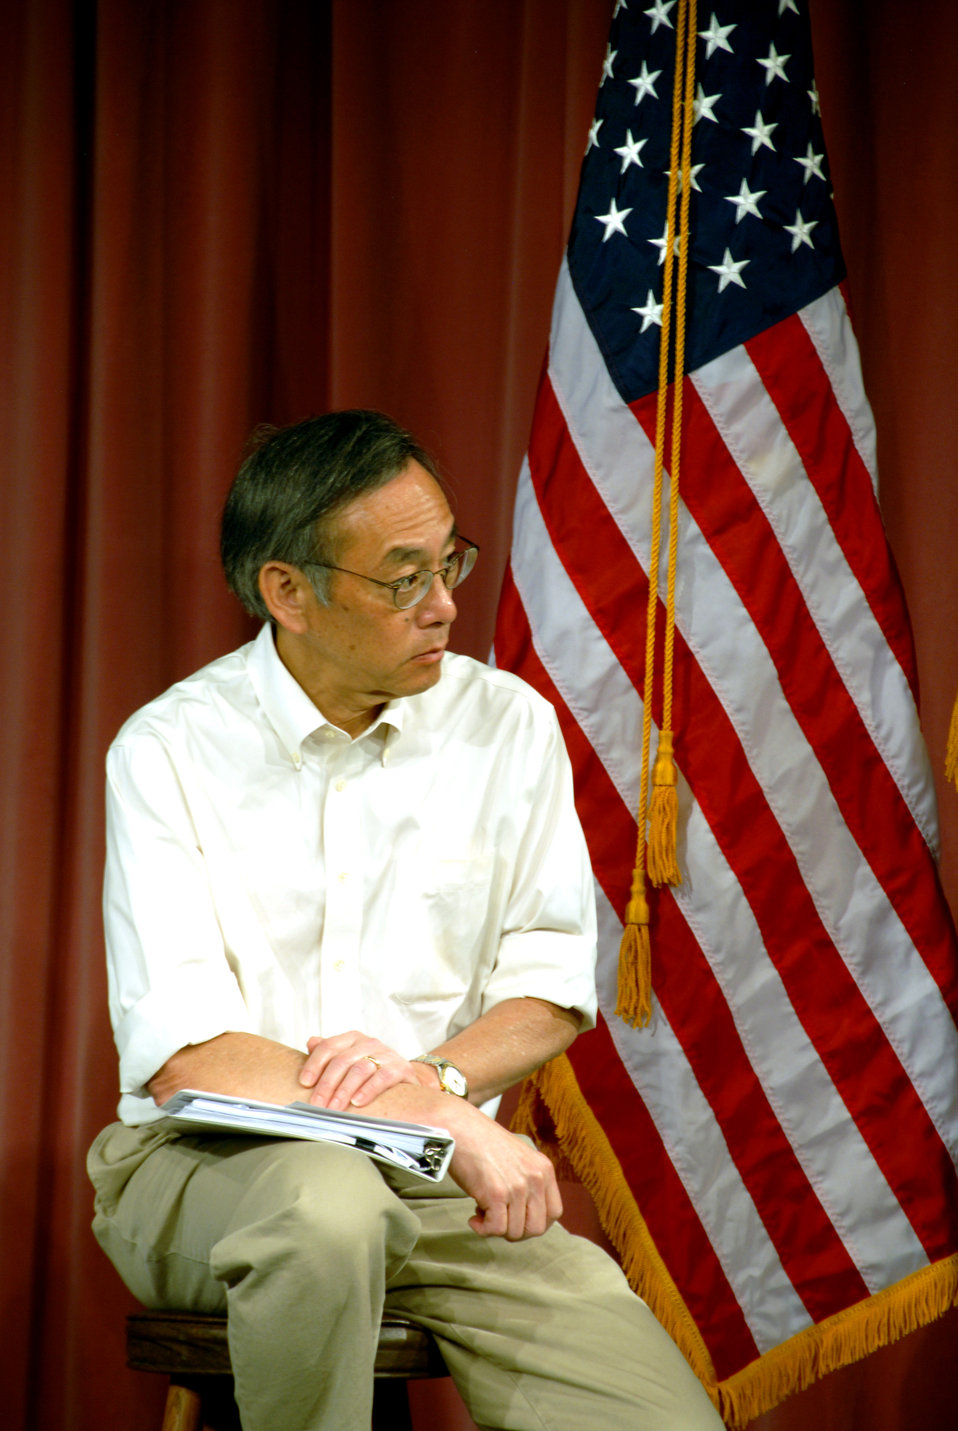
Rural Tour 0078

Rural Tour Alaska Aug 2009